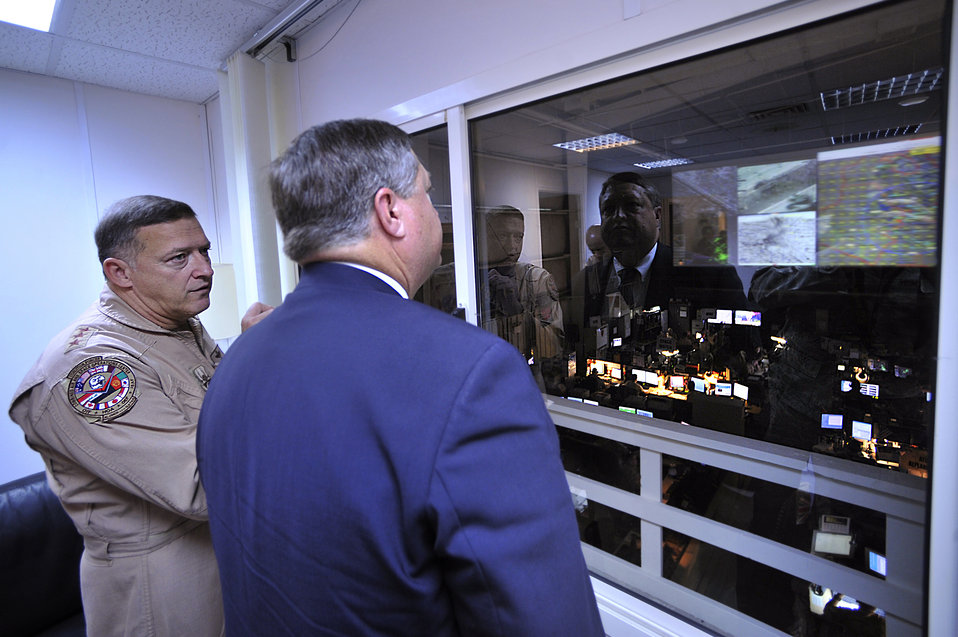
Secretary Donley visits the CAOC

Lt. Gen. Gary North, Combined Forces Air Component commander, U.S. Central Command, discusses the integration and synchronization of airpower Oct. 11 as Air Force Secretary Michael Donley overlooks the operations floor of the Combined Air and Space Operations Center located in Southwest Asia.